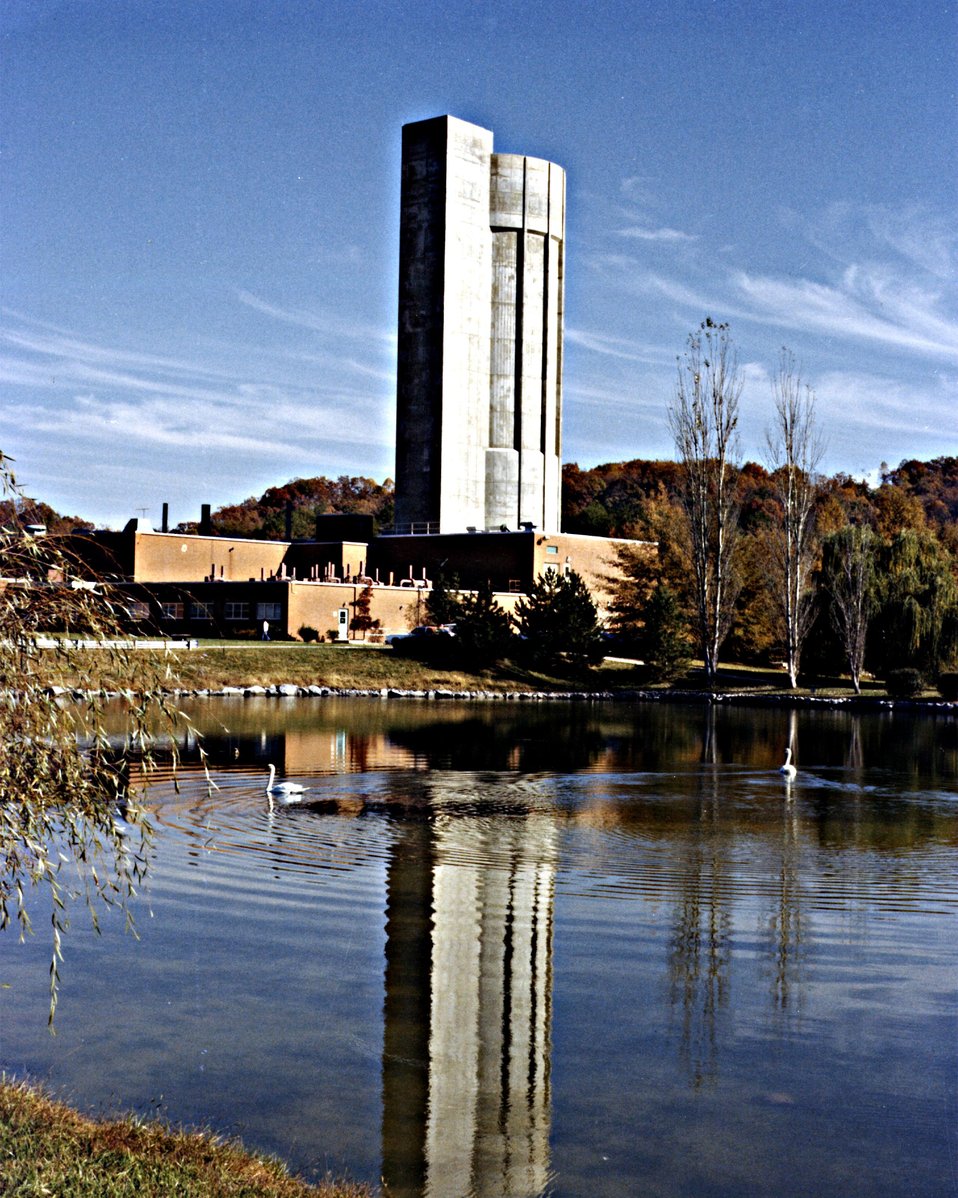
OVERALL VIEW OF THE HOLIFIED HEAVY ION RESEARCH FACILITY DIVERSION DAM AND POWER HOUSE, BOTH WILL BE REPLACED.

THE TOWERING CONCRETE STRUCTURE, THE EQUIVALENT OF A 15- STORY BUILDING, CONTAINS A 25 MILLION VOLT TANDEM ELECTROSTATIC ACCELERATOR, THE WORLD'S LARGEST MACHINE OF ITS TYPE.THE NEW FACILITY MAKES POSSIBLE EXPLORATION OF THE BEHAVIOR OF NUCLEAR MATTER OVER A LARGE PORTION OF THE PERIODIC TABLE AND OF ATOMIC STRUCTURE OVER THE FULL RANGE OF ELEMENTS.